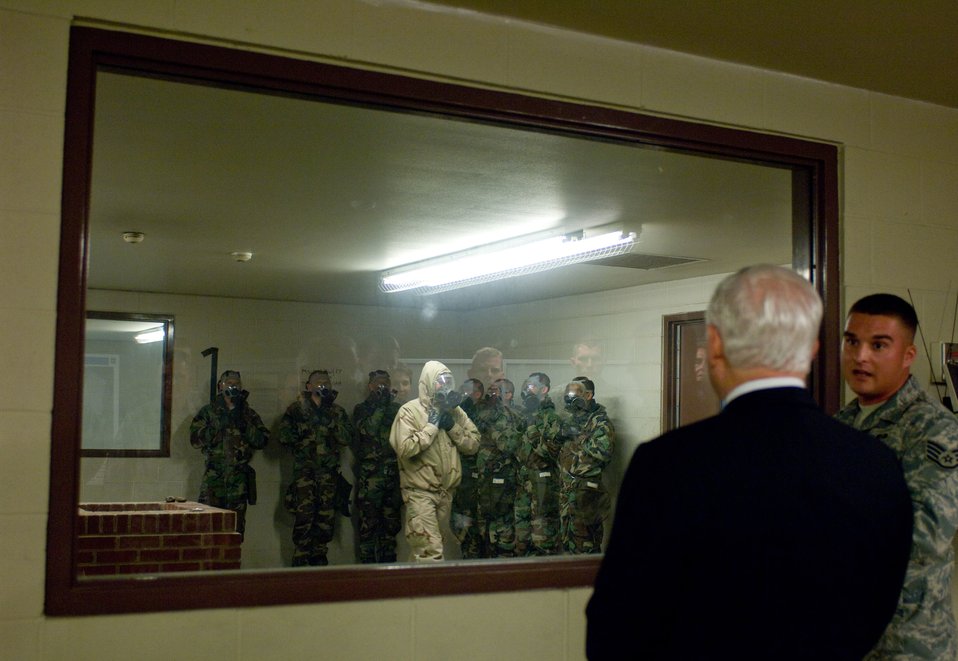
SECDEF visits Airmen, tour BMT facilities

Secretary of Defense Robert M. Gates observes basic trainees in the Chemical, Biological, Radiological, Nuclear and Explosives Chamber during a visit to Lackland Air Force Base, Texas, July 24.